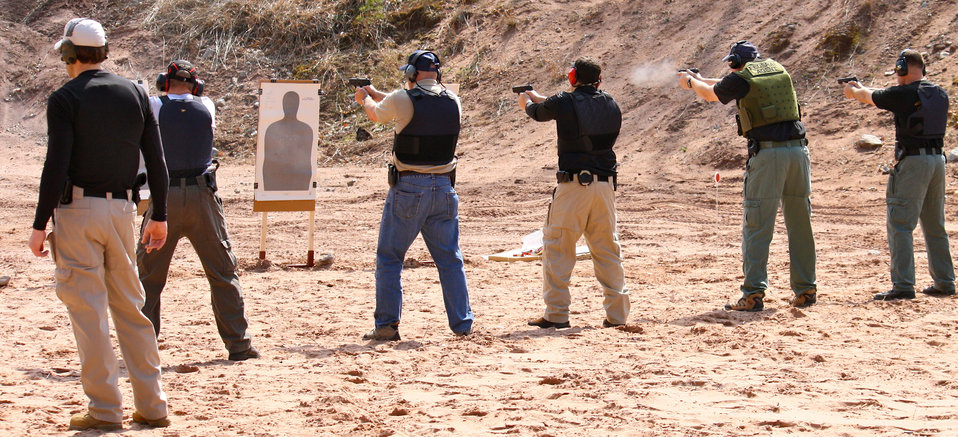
Target Practice with .40 Caliber Handguns

Law Enforcement target practice at outdoor shooting range in Glastonbury, CT.